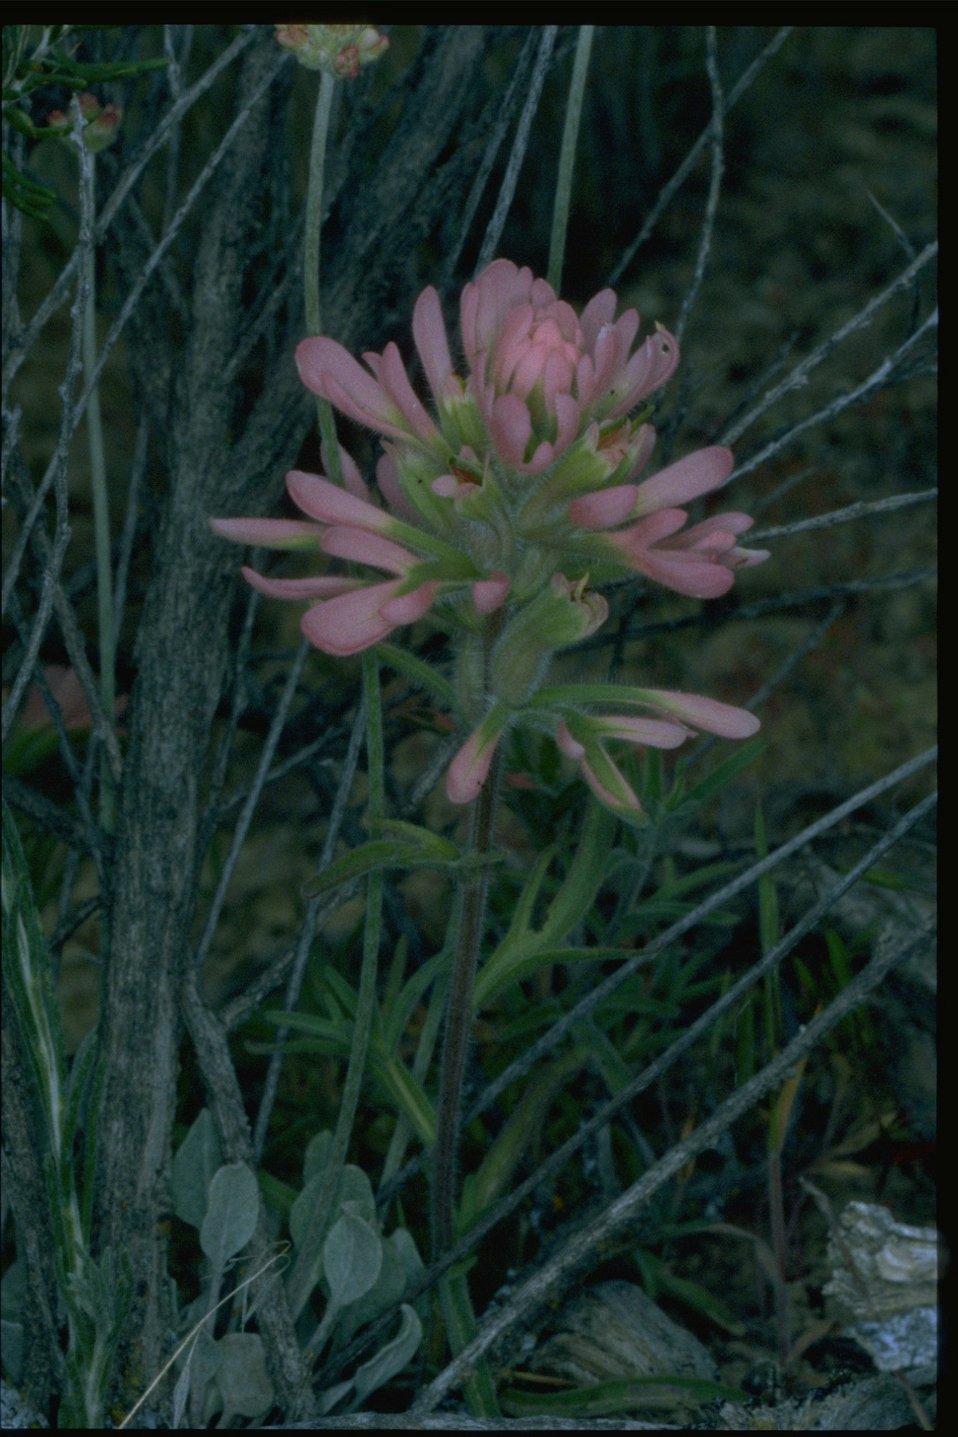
Medium shot of Pink Indian Paintbrush wildflower.